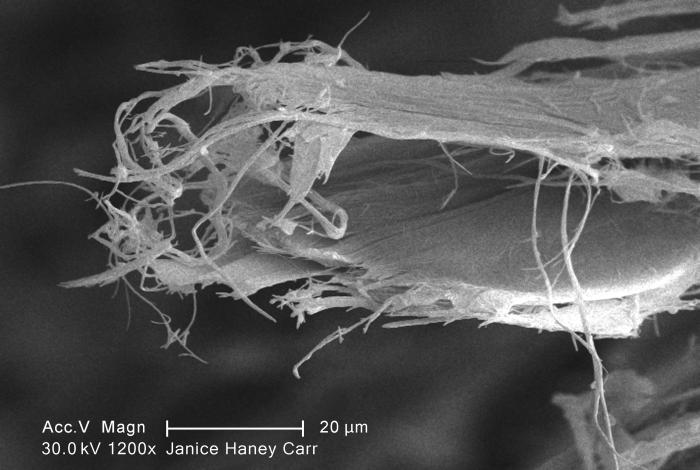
Under a high magnification of 1200X, this scanning electron micrograph (SEM) revealed some of the microcrystalline ultrastructure exhibited by a piece of raw chrysotile, or white asbestos, which had been excavated from the Lowell Asbestos Mine on Belvidere Mountain, Vermont.